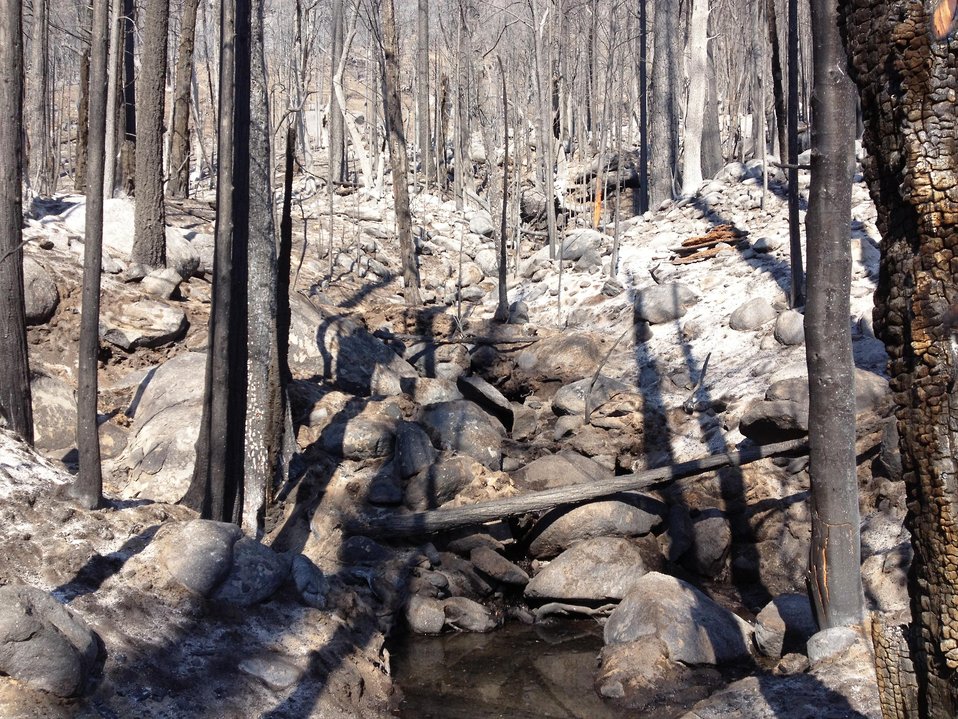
The Granite Creek Drainage area has suffered high severity burn damage from the Rim Fire. Burned Area Emergency Response (BAER) is a rapid assessment of burned watersheds by a BAER team to identify imminent post-wildfire threats to human life and safety property and critical natural or cultural resources on National Forest System lands and take immediate actions to implement emergency stabilization measures before the first major storms. Fires result in loss of vegetation exposure of soil to erosion and increased water runoff that may lead to flooding increased sediment debris flows and damage to critical natural and cultural resources. BAER team members implement seeding and mulching installation to prevent erosion, erect temporary water run-off control structures that will protect recovering areas, and installation of warning signs, replace safety related facilities, remove safety hazards, prevent permanent loss of habitat for threatened and endangered species, and prevent the spread of noxious weeds and protect critical cultural resources. The Rim Fire in the Stanislaus National Forest near in California began on Aug. 17, 2013 and is under investigation. The fire has consumed approximately 256,169 acres and is 84% contained.